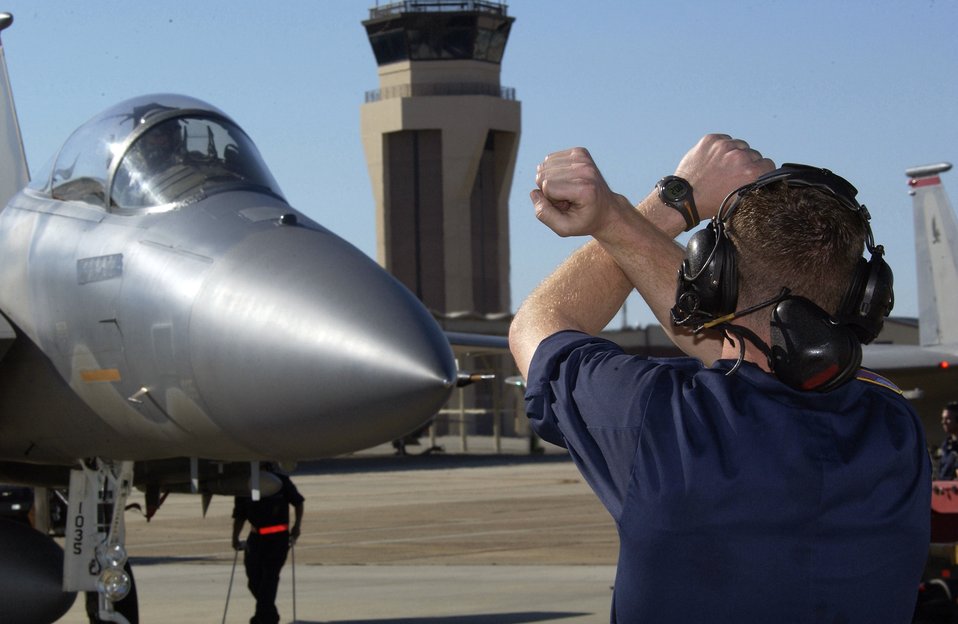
William Tell 2004

TYNDALL AIR FORCE BASE, Fla. - Staff Sgt. David Hunter gives his pilot the hold sign here Nov. 8 during William Tell 2004. The two-week competition challenges pilots, weapons loaders and maintainers from five F-15 fighter wings. Sergeant Hunter is assigned to the 1st Fighter Wing at Langley Air Force Base, Va.